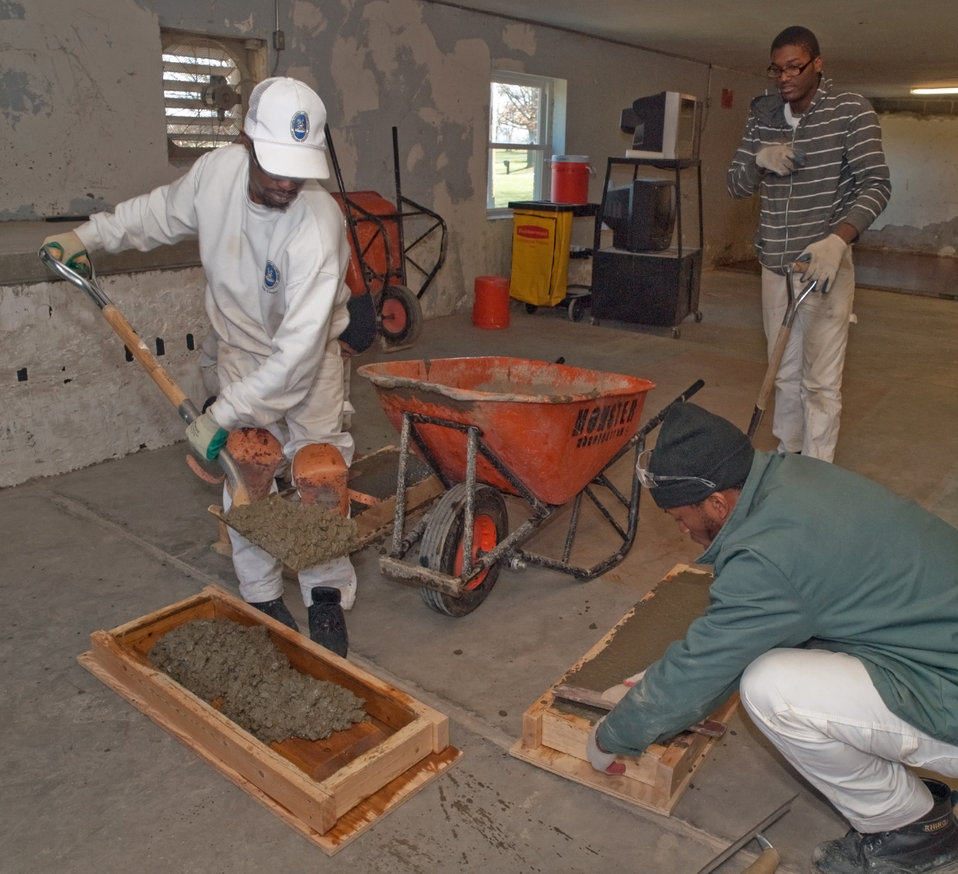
Students practice concrete pouring in the Cement Masonry trade class at the Job Civilian Conservation Corp Center (JCCCC) in Harpers Ferry, WV on Nov. 8, 2012. The U.S. Forest Service manages 28 Job Corps Civilian Conservation Centers.